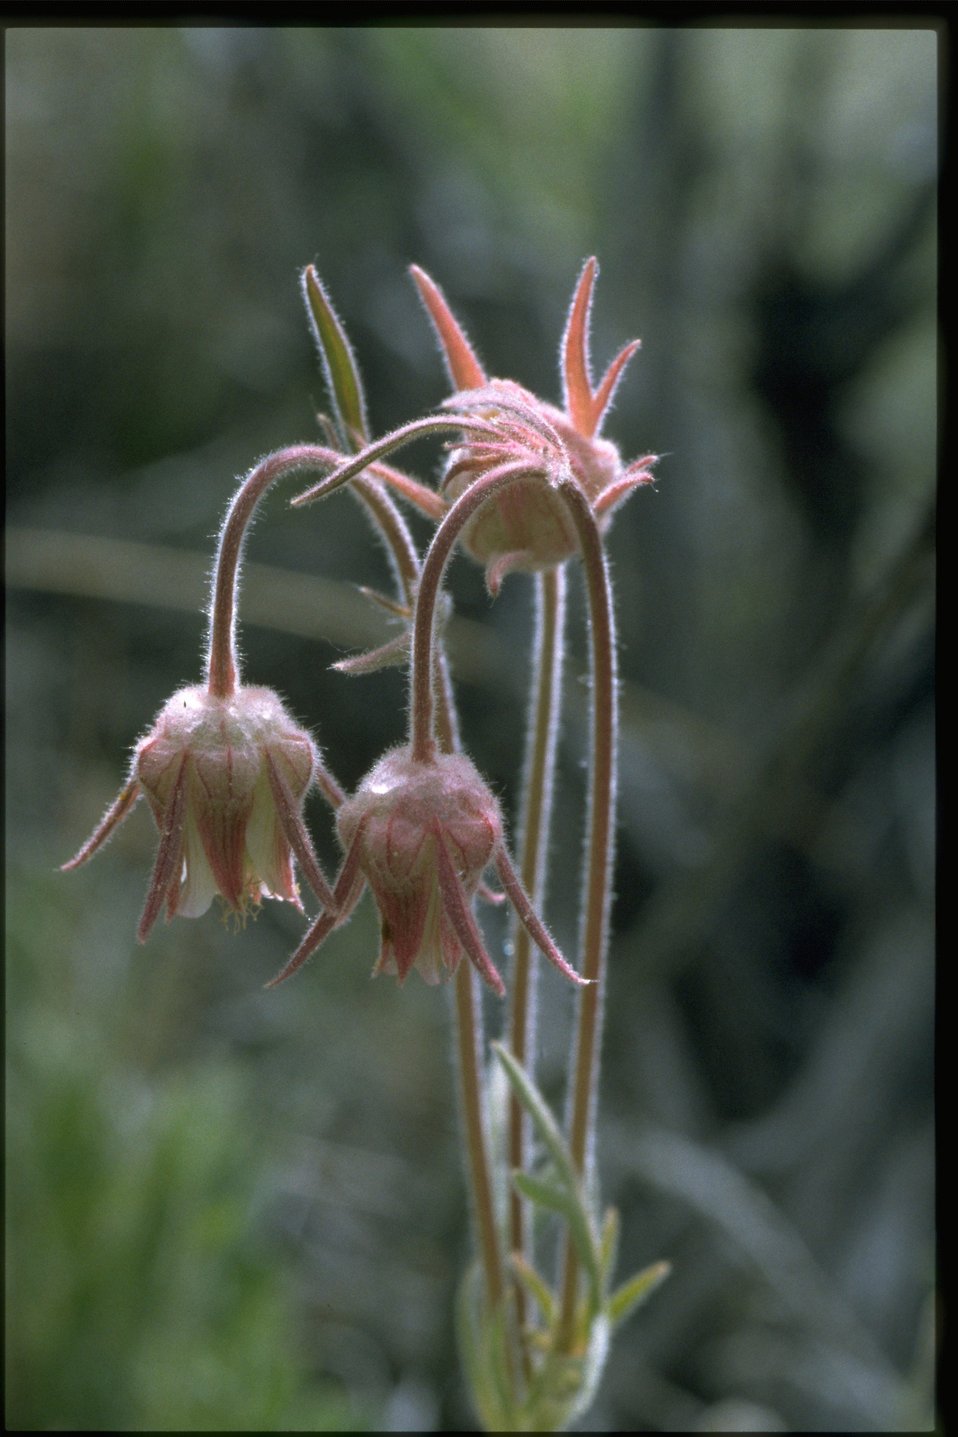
Closeup shot of old man's whiskers (Geum triflorum).